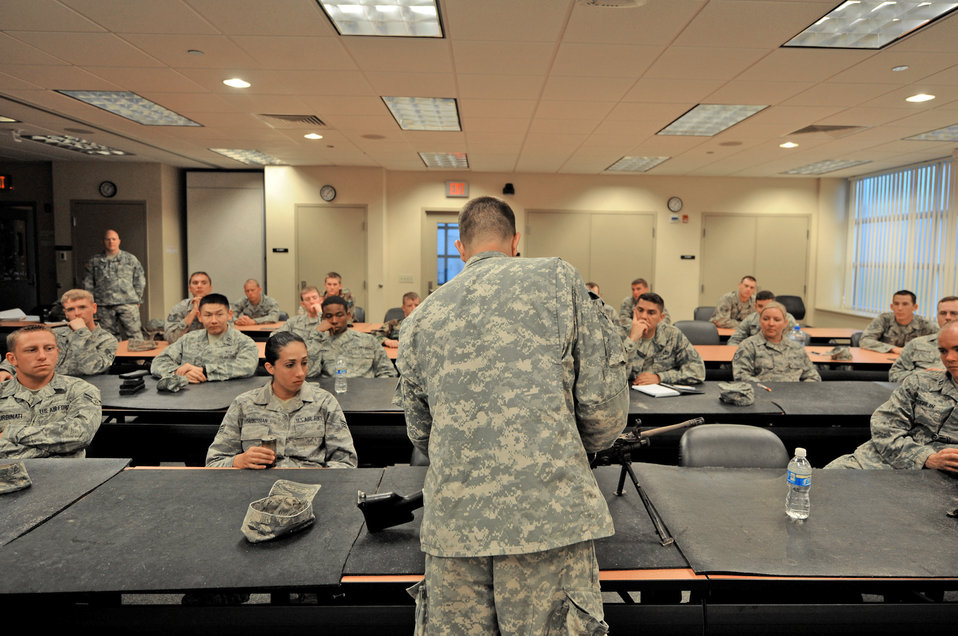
Combat weather Airmen test out new initiative

Army Staff Sgt. Matthew Strang teaches Airmen how to use an M240 machine gun during combat weather training July 20 at Camp Blanding, Fla. The Airmen are completing a new 30-day course with help from the Army National Guard. Sergeant Strang is an infantry instructor assigned to the 211th Regiment, Regional Training Institute.